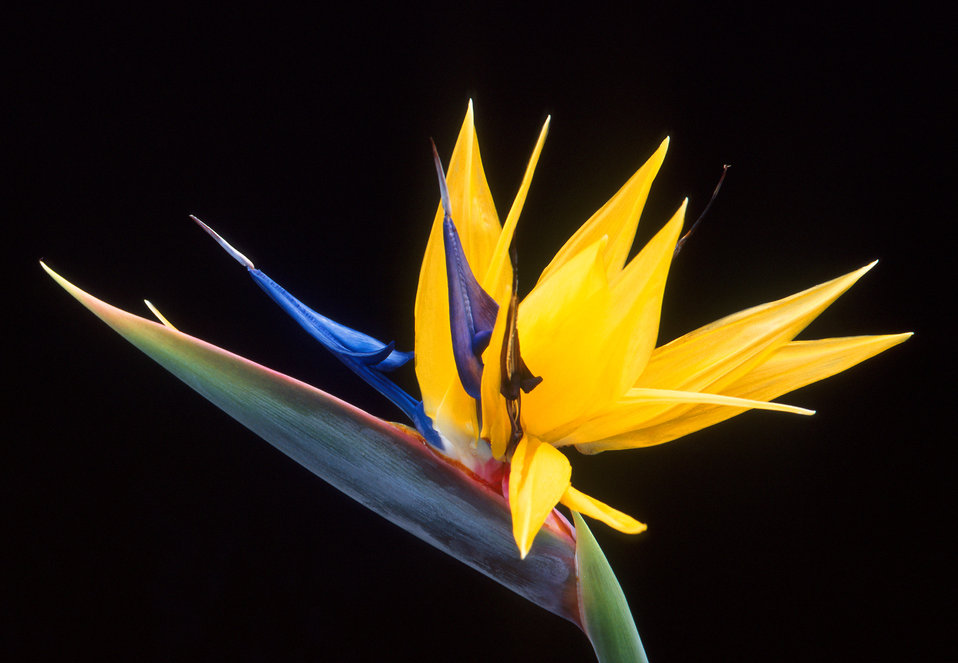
The bird-of-paradise flower is named after its resemblance to the bird of paradise in South Africa.